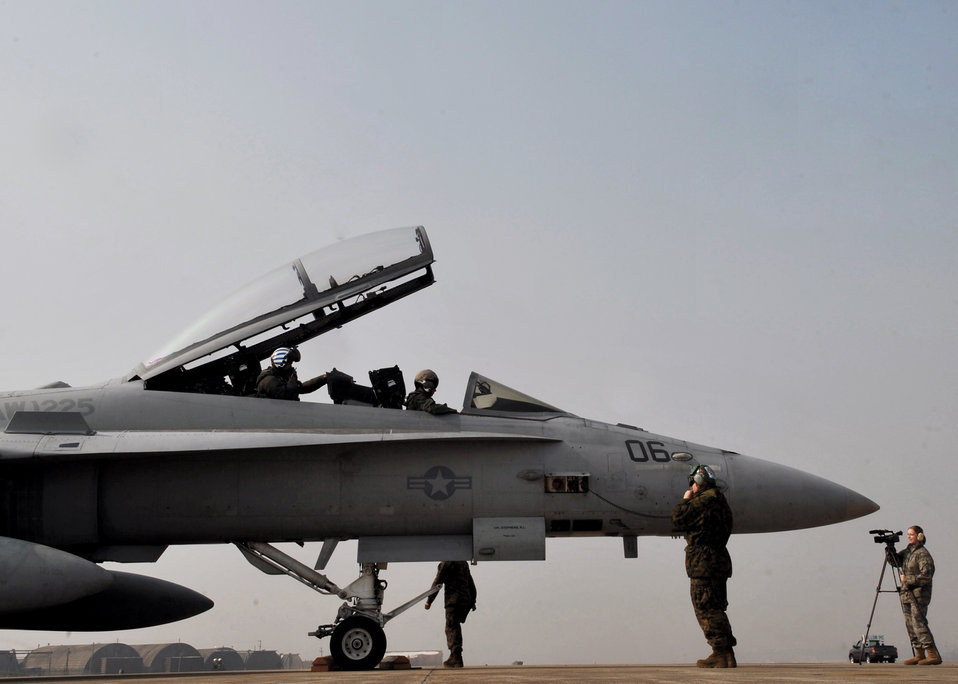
MarineFAS 225 at Osan AB

Marines from the Marine Fighter Attack Squadron 225 inspect an F-18 Hornet Feb. 2, 2011, at Osan Air Base, South Korea.The